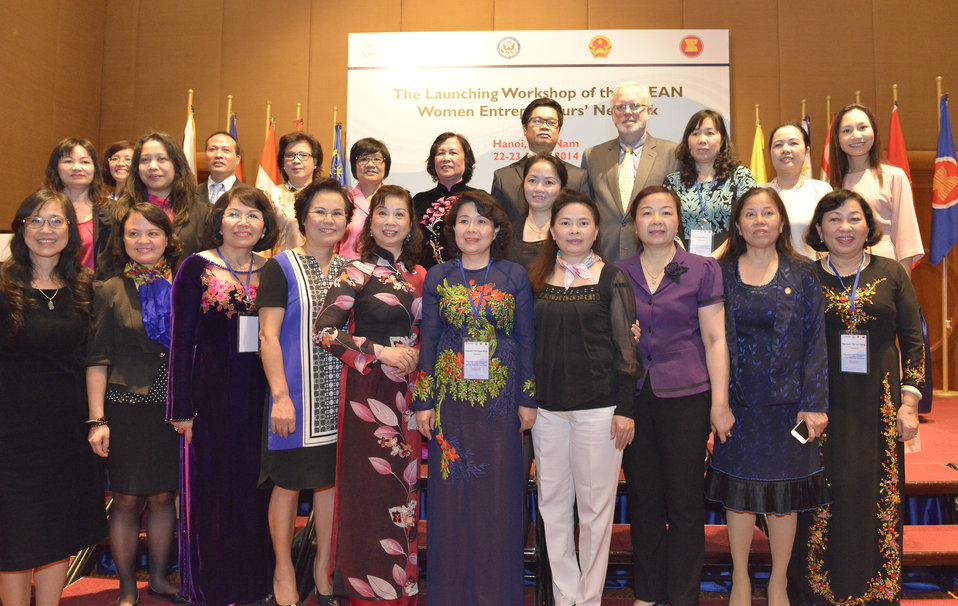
Vietnamese members of the ASEAN Women Entrepreneurs' Network

USAID/Vietnam